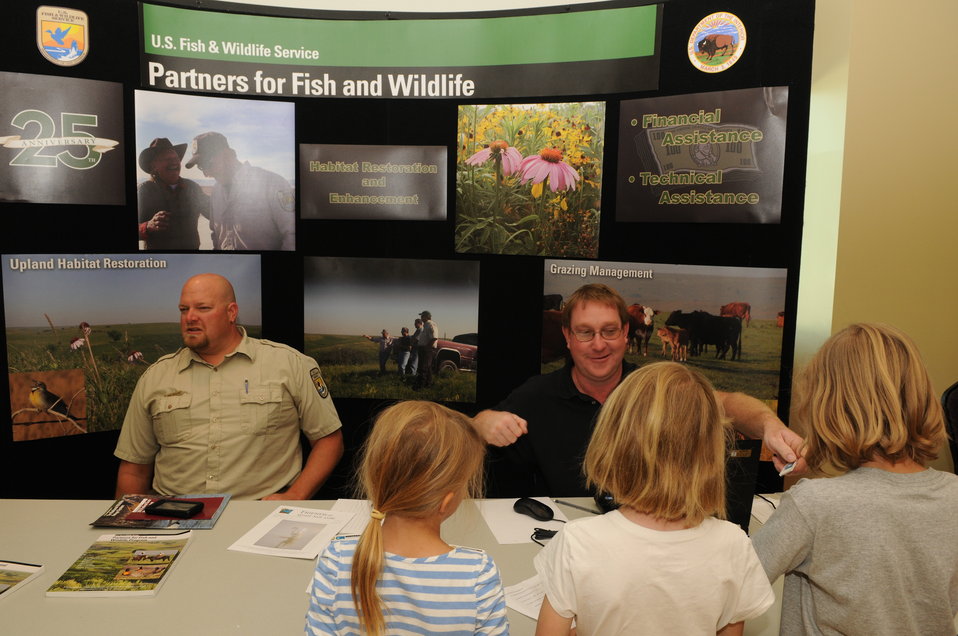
Youth Outreach

The U.S. Fish & Wildlife Service sponsored the 2012 Federal Duck Stamp Art Contest September 28 and 29 in Ogden, Utah, at Weber State University. A panel of five judges was responsible for choosing the art work used to design the 2013-2014 Migratory Bird Hunting and Conservation Stamp.